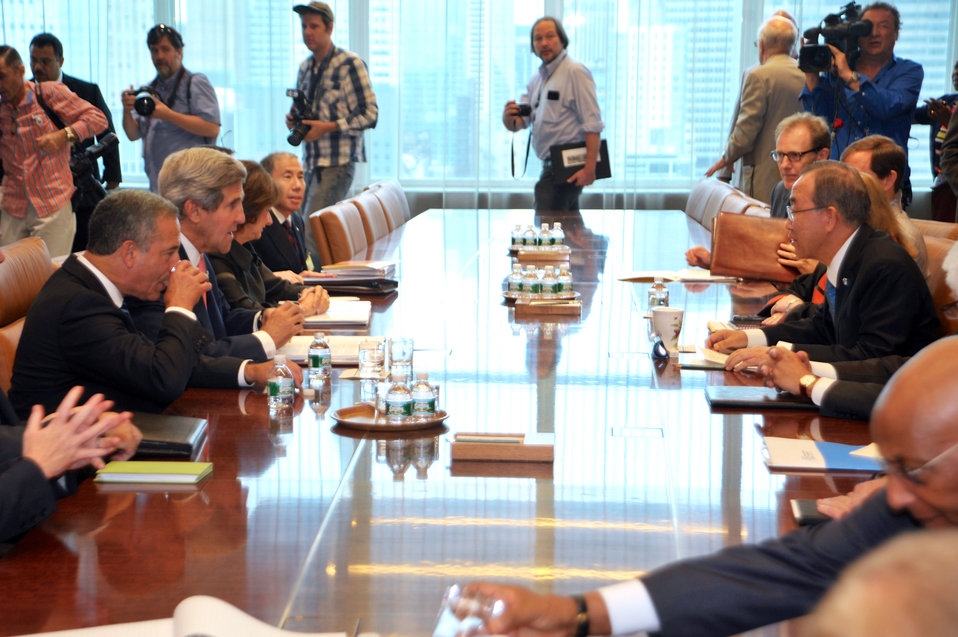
Secretary Kerry Meets With UN Secretary General Ban Ki-moon

U.S. Secretary of State John Kerry sits across from United Nations Secretary General Ban Ki-moon during a meeting at the UN Headquarters in New York City on July 25, 2013.